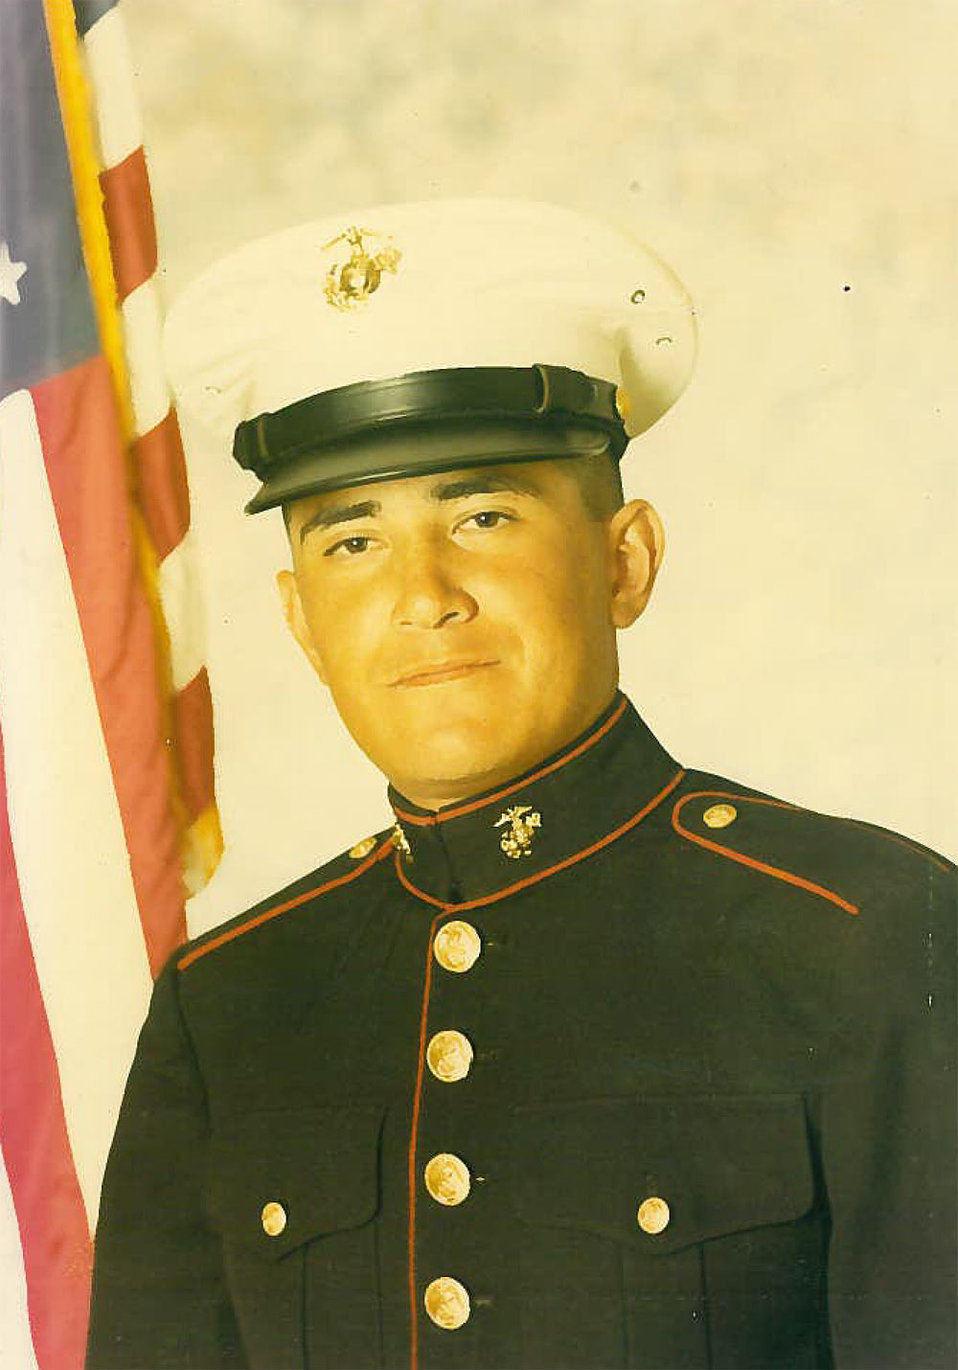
Conrad Chavez-Southwest Region

Marine veteran Conrad Chavez is currently a Maintenance Worker at Las Vegas National Wildlife Refuge in Las Vegas, New Mexico.